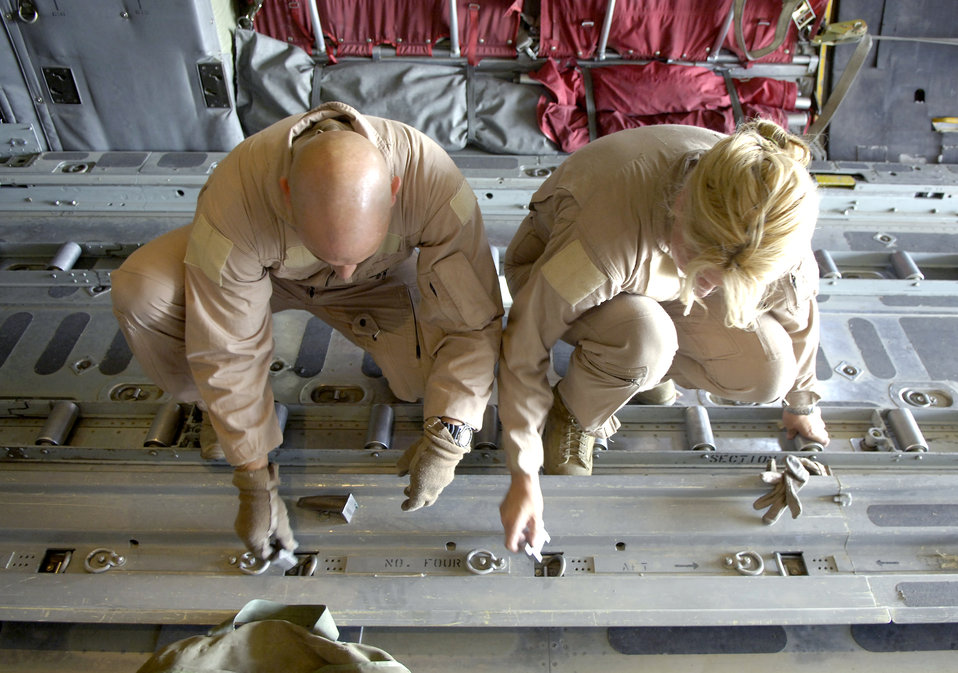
Bagram C-130s drop high-tech cargo delivery system

Tech. Sergeants Steven Hayes and Luzmarina Arevalo install the center vertical restraint in a C-130 Hercules Aug. 25. Sergeant Hayes is a loadmaster and Joint Precision Air Drop System, or JPADS, trainer from the Air Mobility Warfare Center. Sergeant Arevalo is a loadmaster with the 774th Expeditionary Airlift Squadron. The 774th EAS performed the first operational drop of a new Global Positioning System-guided JPADS bundle.